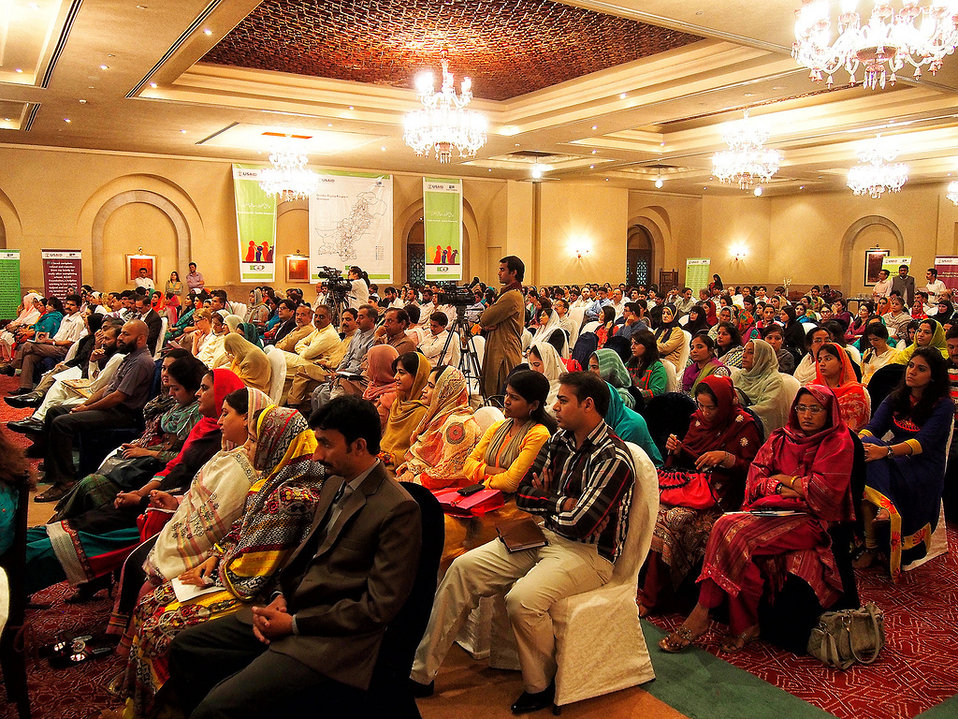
Gender Equity Program, Pakistan

USAID and Aurat Foundation annual event in Islamabad, Sept. 20, 2013